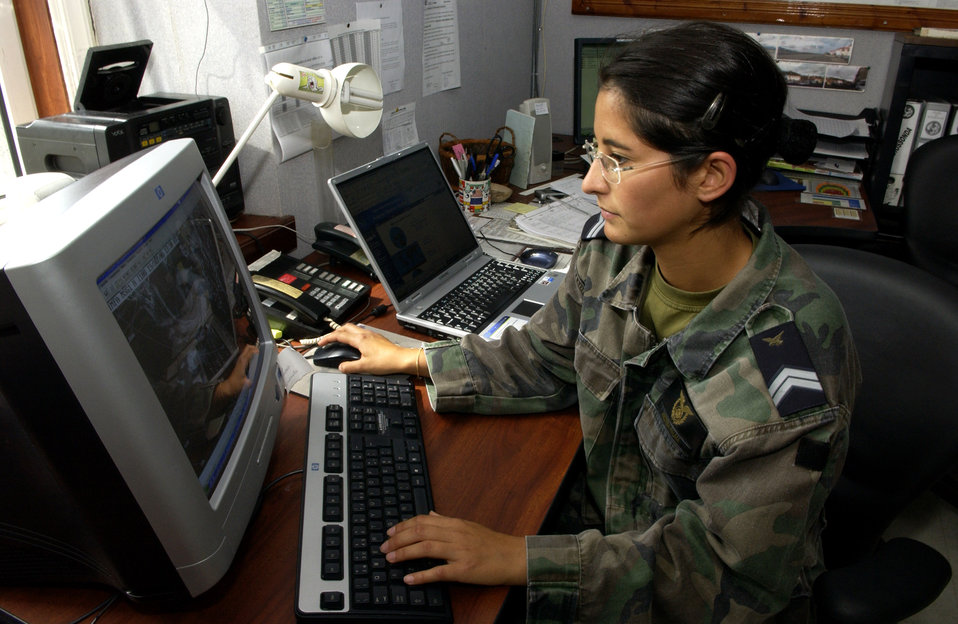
Lajes Field prepares for Hurricane Gordon

Cabo-Adjunto Andreia Palma of AB4 prepares a weather forecast in advance of Hurricane Gordon, expected to hit Lajes Field, Azores, Portugal, early Sept. 20.